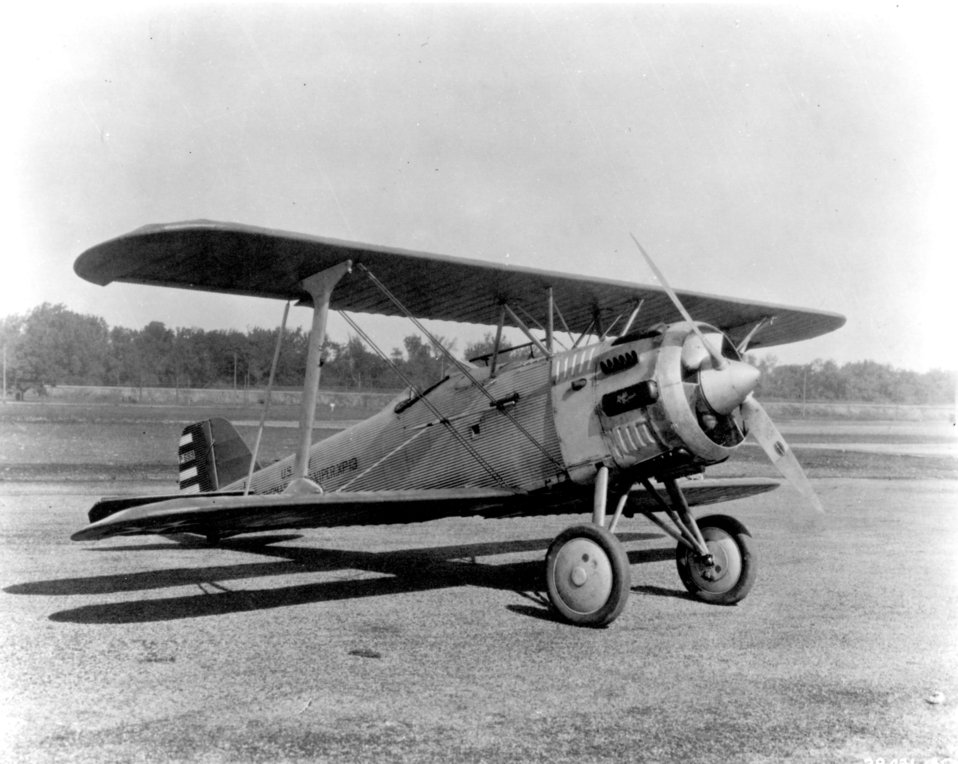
P-13 Viper

EARLY YEARS -- P-13 Viper